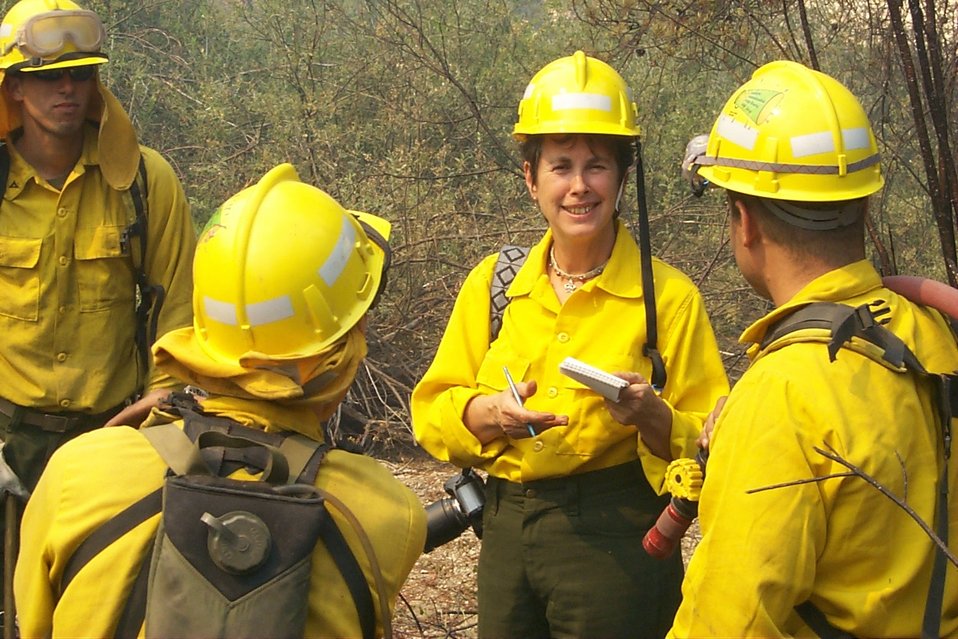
Fire crew Fire Clearwater Fire Salmon Field Office USRD Upper Snake River District